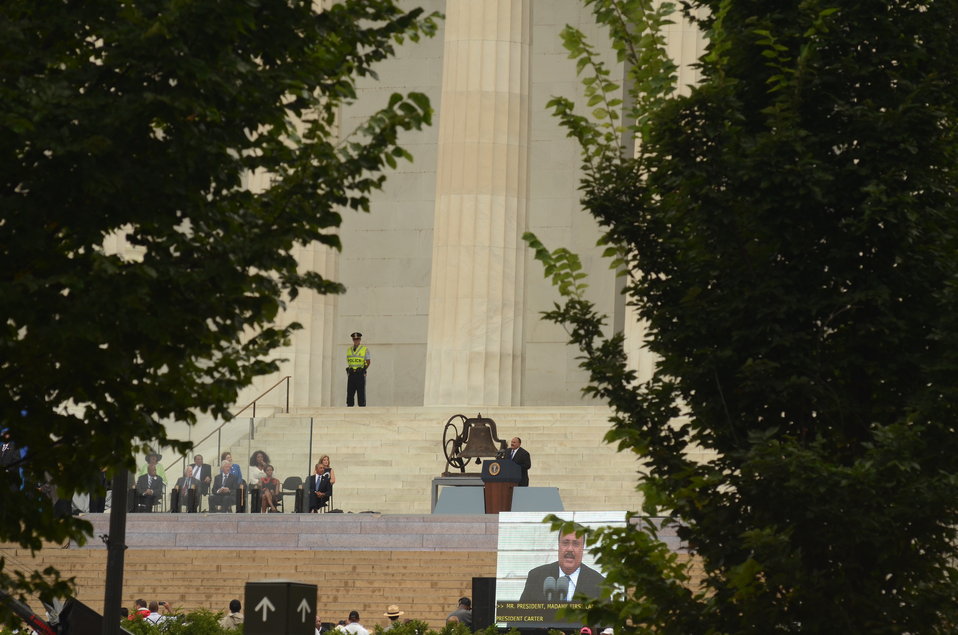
Martin Luther King III speaks to marchers at the Lincoln Memorial for the March on Washington, D.C., on Wed., Aug. 28, 2013.